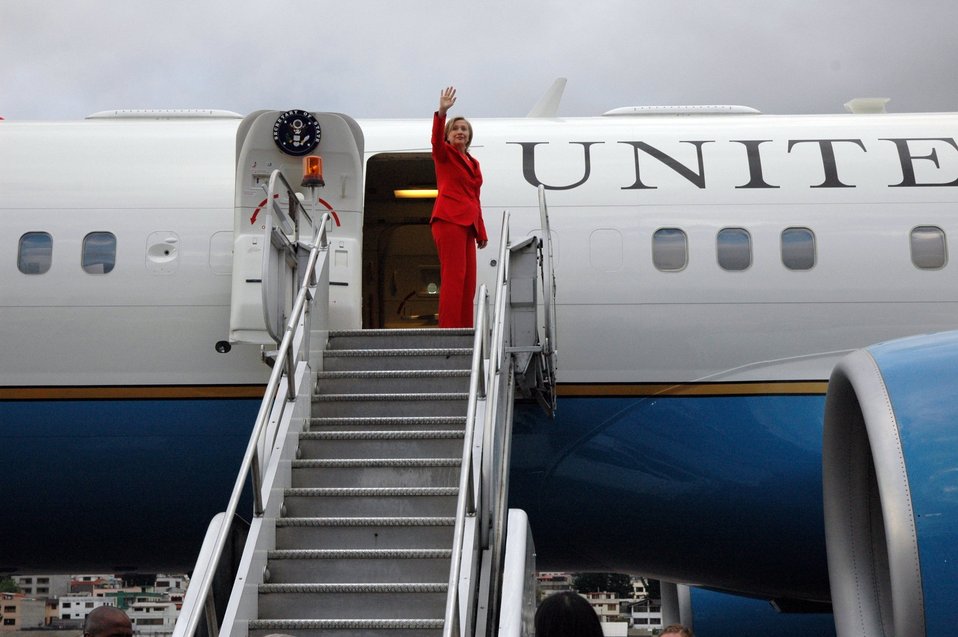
Secretary Clinton Waves Goodbye to Quito, Ecuador

U.S. Secretary of Clinton waves goodbye to Quito, Ecuador, on June 8, 2010.